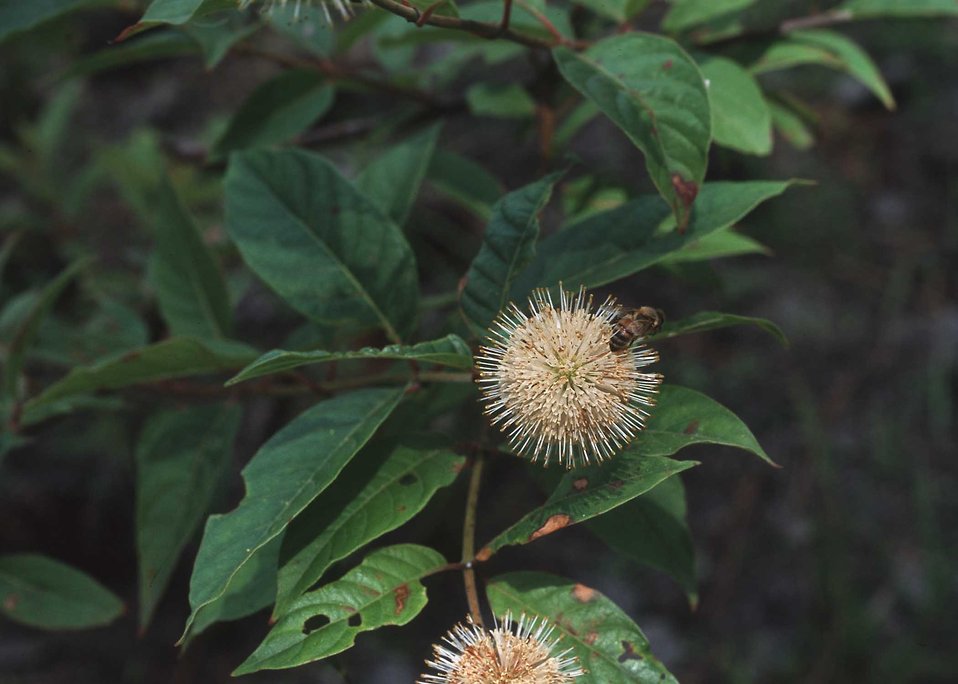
Buttonbush is a shrub or small tree that gets its name from its fragrant ball like cluster of white flowers which bloom May-August. A good source of nectar for butterflies and seeds for ducks and deer.